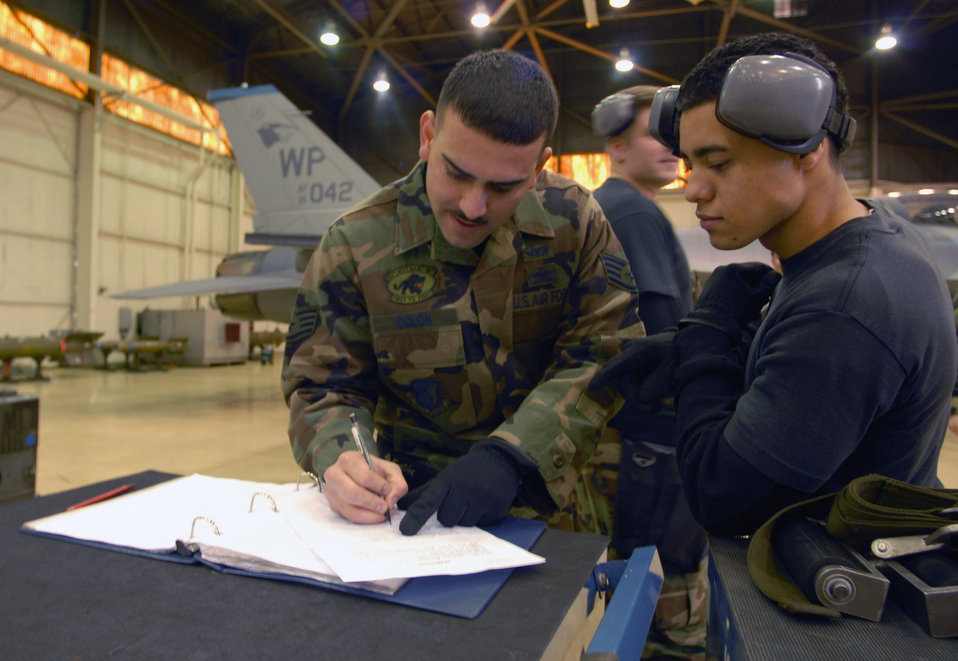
Heavy metal

Staff Sgt. Danny Colon (left) and Airman 1st Class Jay Maldonado review their checklist prior to the start of the weapons load competition Dec. 14 at Kunsan Air Base, South Korea. This was the final weapons load competition between the 80th and 35th Fighter squadrons for 2007. Sergeant Colon and Airman Maldonado are from the 8th Aircraft Maintenance Squadron.